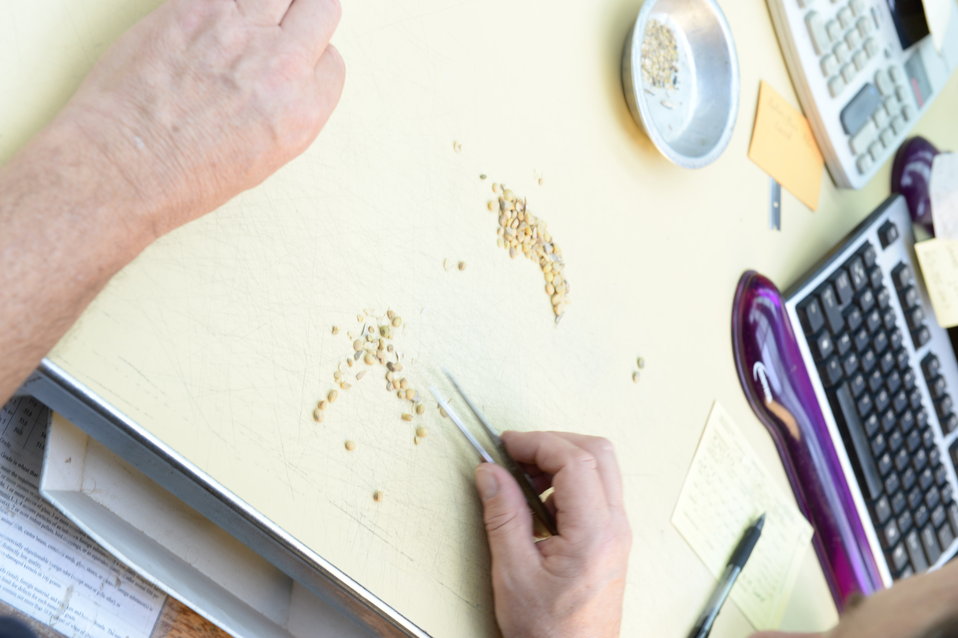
U.S. Department of Agriculture (USDA) Grain Inspection, Packers and Stockyards Administration (GIPSA) Federal Grain Inspection Service (FGIS) employee examines grain samples at the FGIS inspection laboratory in New Orleans, LA on Monday, Nov. 18, 2013.